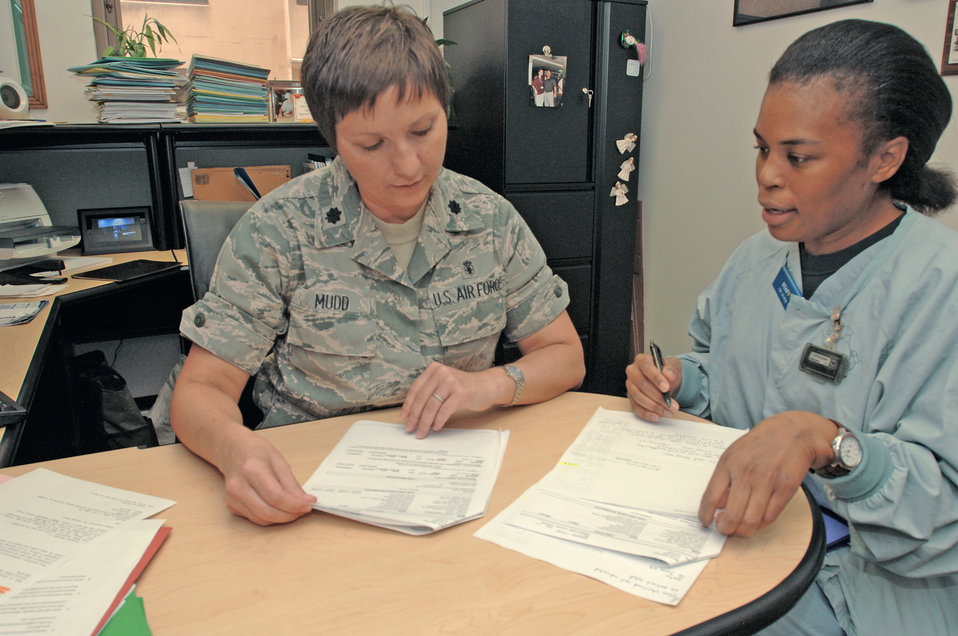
Lackland officer wins Benjamin O. Davis Jr. Award

Lt. Col. Jacqueline Mudd (left) looks over flash sterilization data with Capt. Yvonne Storey July 22 at Lackland Air Force Base, Texas. Colonel Mudd was chosen the 2009 recipient of the Gen. Benjamin O. Davis Jr., Military Award by the Tuskegee Airmen Incorporated. Colonel Mudd is the operating room flight commander for the 59th Surgical Operations Squadron, and Captain Storey is an operating room nurse in the 59th SOS.